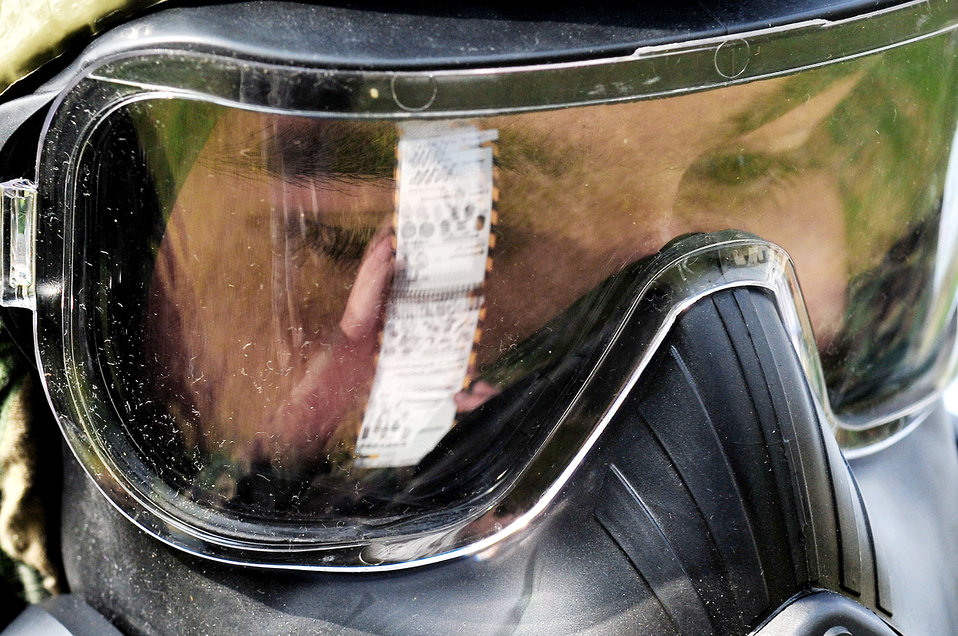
Kadena Airmen train to 'survive'

Airman 1st Class Robert Hawkins, 18th Munitions Squadron conventional maintenance crew member, goes through his Airman's Manual to identify unidentified explosive ordnance during the